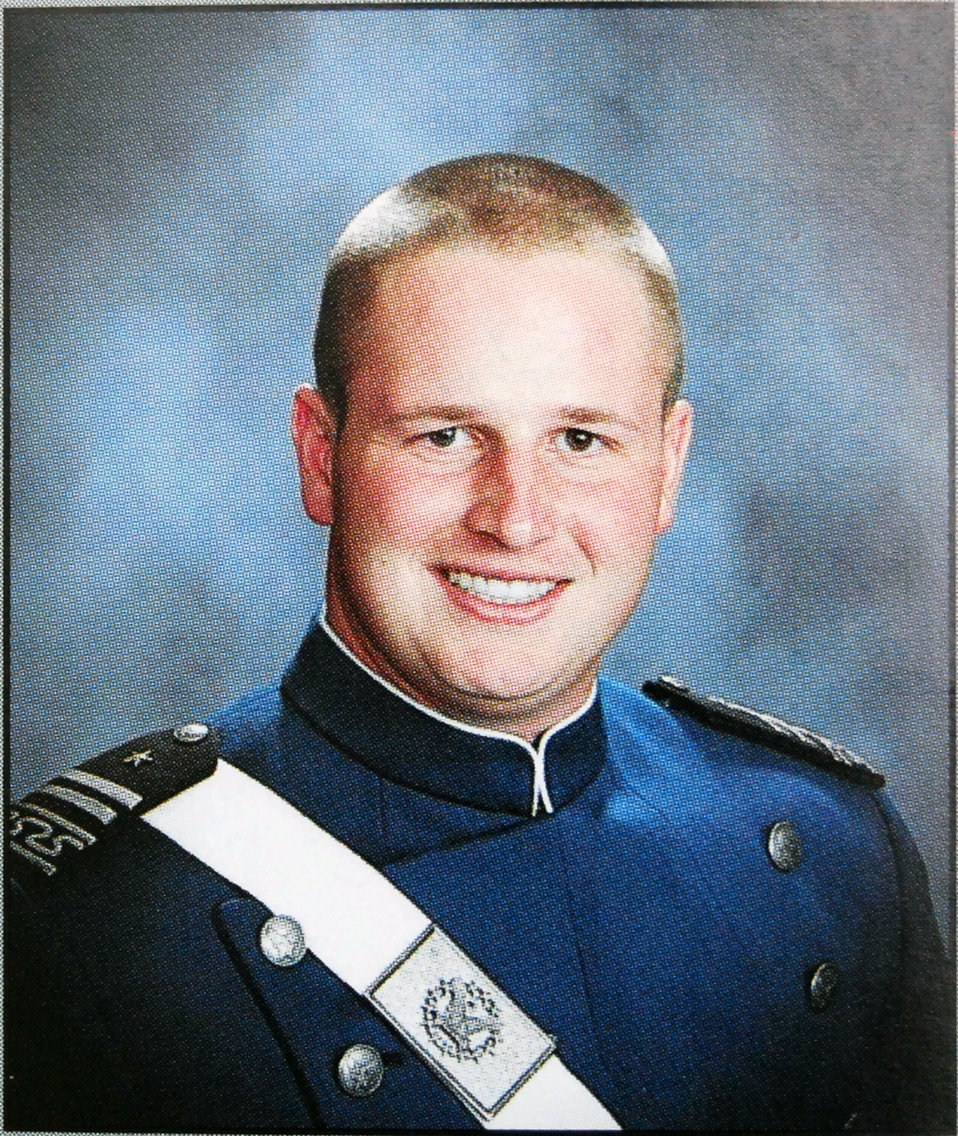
2007 Academy grad killed in plane crash

First Lt. Martin Anthony Riggan, 25, was pronounced dead after a plane crash at the Colorado Springs Airport Dec. 22, 2010, in Colorado Springs, Colo. Lieutenant Riggan was a 2007 graduate of the U.S. Air Force Academy and a native of Little Rock, Ark.